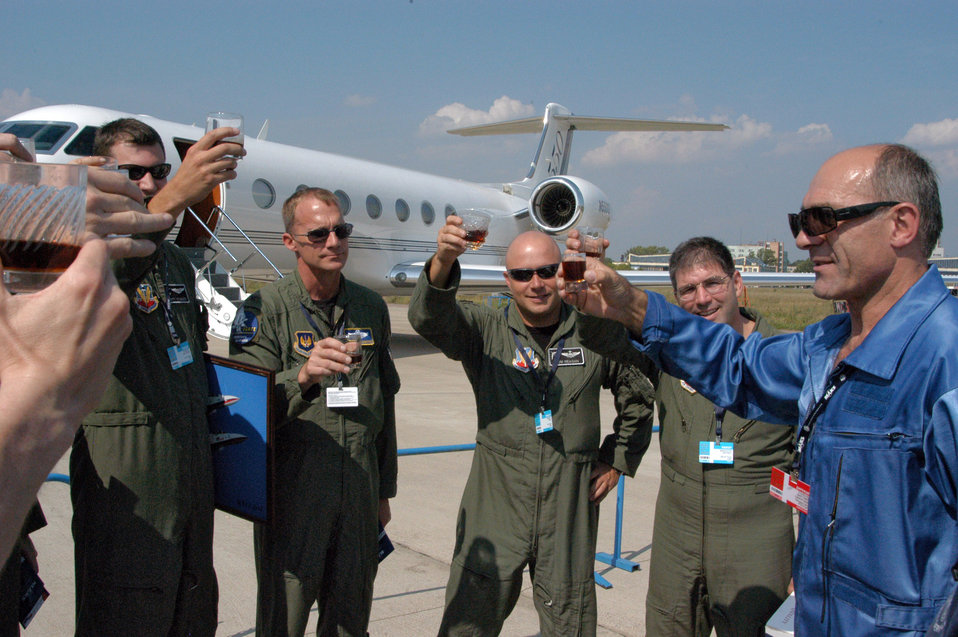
Air Force helps foster American, Russian relations

Capt. Matt Stanley, Col. Stephen Brummond, Maj. Tom Reagan and Lt. Col. Jeff Marcotte make a toast with retired Russian Gen.-Lt. Magomed Tolboyev upon the Air Force crew's arrival Aug. 18 at Ramenskoye Airfield in Zhukovsky, Russia. About 65 Airmen from bases in Europe and the states are participating in the Moscow International Air Show, which runs Aug. 21 to 26. Colonel Brummond is assigned to Ramstein Air Base, Germany, and the other Airmen are from Barksdale Air Force Base, La.